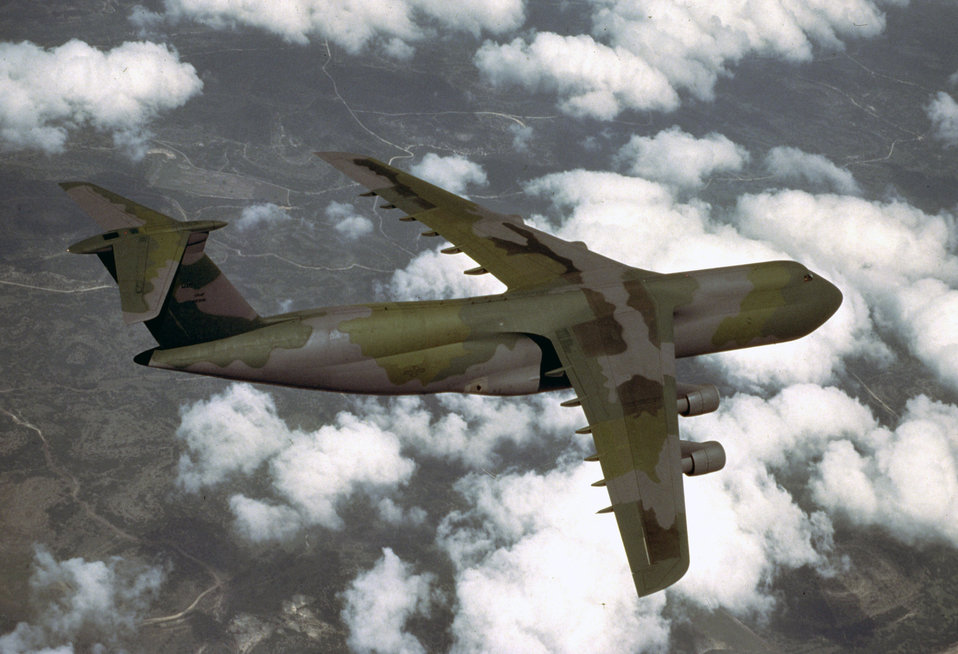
C-5 Galaxy, June 1970.